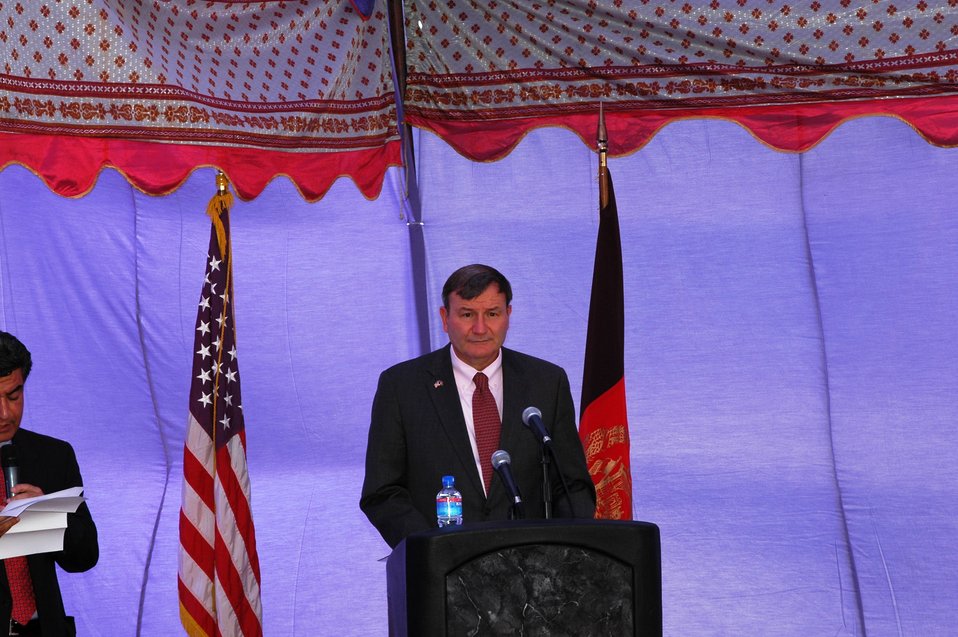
105 MW Tarakhil Power Plant Handover